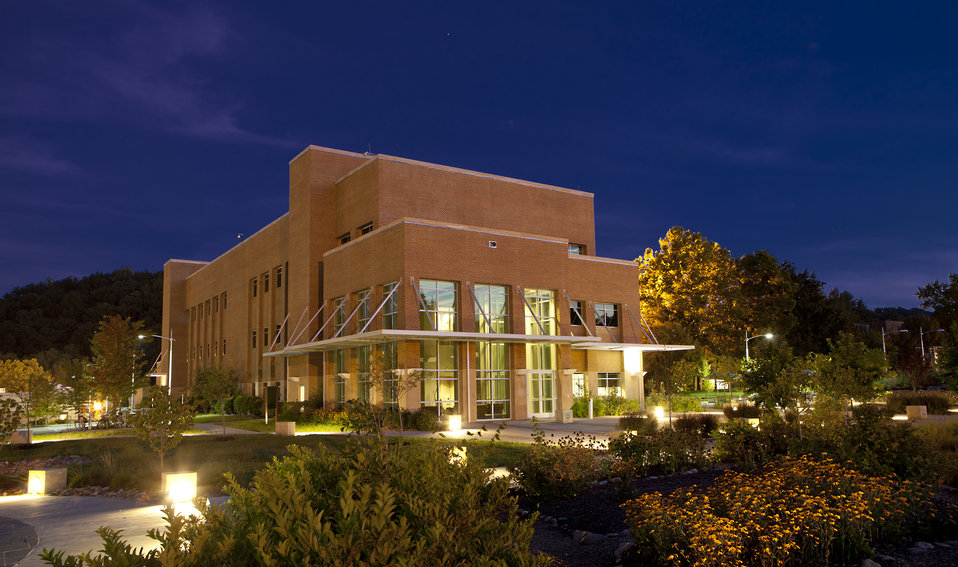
Shown is the Joint Institute for Biological Sciences (JIBS) Building, which houses Bioenergy Science Center (BESC) offices and laboratories at Oak Ridge National Laboratory.

BESC is a multi-institutional, multidisciplinary research organization focused on the fundamental understanding and elimination of biomass recalcitrance.